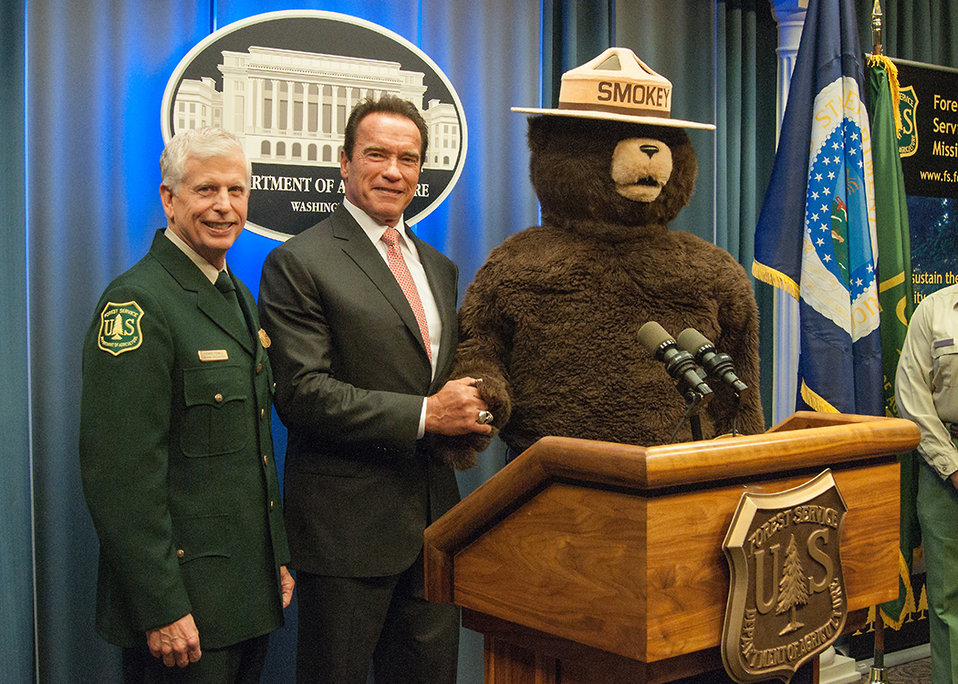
From left: U.S. Forest Service Chief Tom Tidwell, former California Governor Arnold Schwarzenegger and Smokey Bear pose during an event honoring Gov. Schwarzenegger as an honorary Forest Ranger at the U.S. Department of Agriculture in Washington, D.C. Wed., Oct. 29, 2013. Gov. Schwarzenegger is being honored for his signing and implementing the landmark California Global Warming Solutions Act of 2006 and continued leadership on climate change since leaving office.